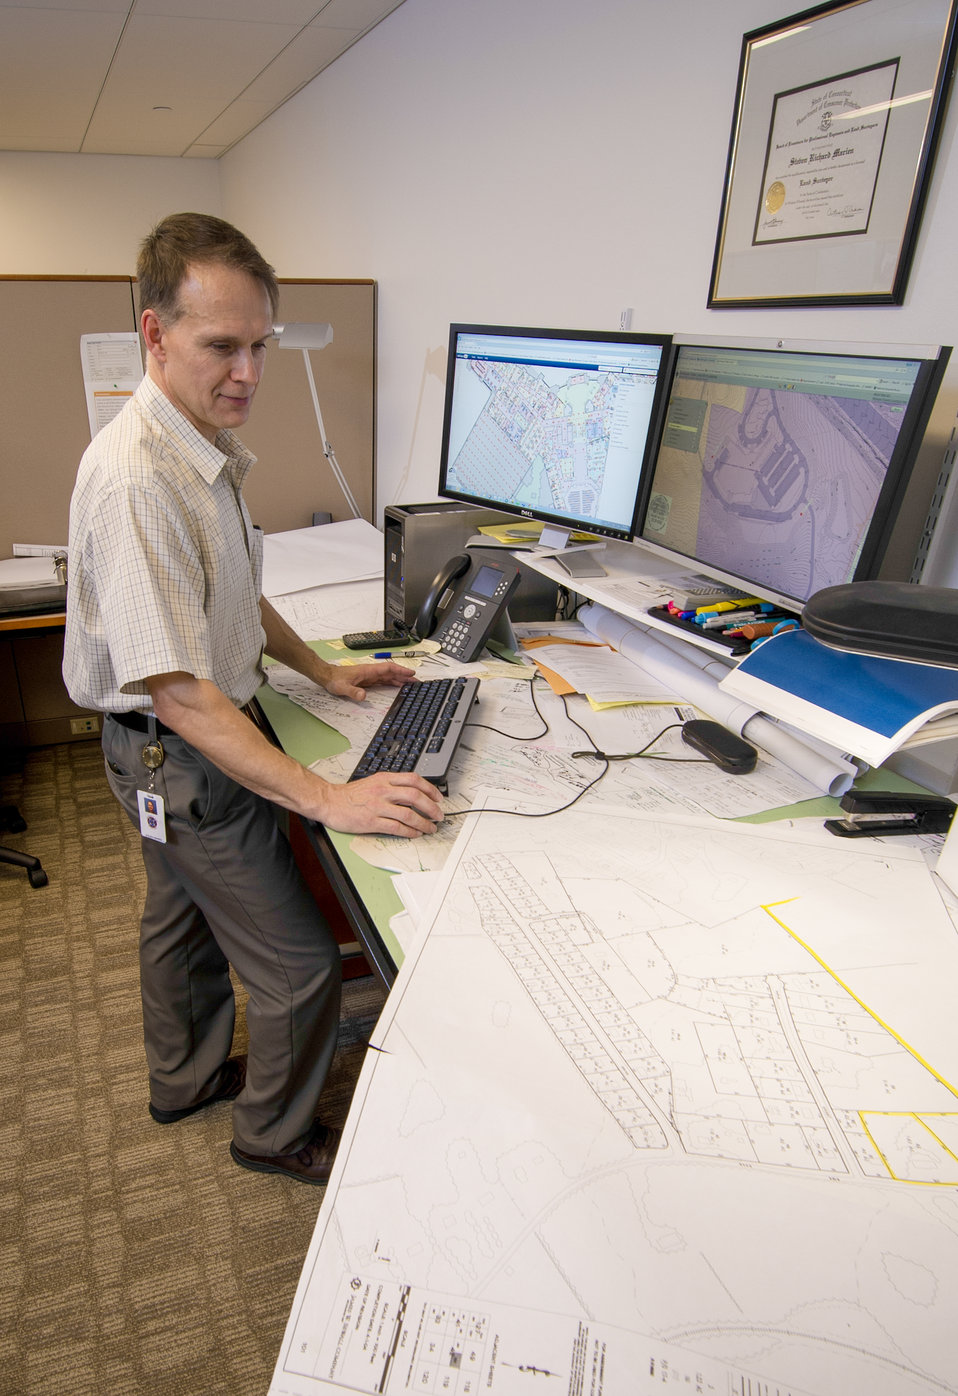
Computer-Aided Design (CAD) Document Control Manager Steve Marien works at his office in the Mohegan Tribe Community Center and Government Building in Uncasville, CT on Nov. 18, 2013. A U.S. Department of Agriculture (USDA) Rural Development (RD) Community Facility Loan was provided to the Mohegan Tribe for the construction of the Mohegan Tribe Community Center and Government Building in Uncasville, CT. USDA’s RD Community Facilities Programs makes and guarantees loans to develop essential community facilities in rural areas and towns of up to 20,000 in population. Loans and guarantees are available to public entities such as municipalities, counties, parishes, boroughs, and special-purpose districts, as well as to non-profit corporations and tribal governments. The 160,000 square foot building Center hosts an exhibit celebrating federal recognition, history of Mohegan Chiefs, a new Library and Archives space, new Arts and Crafts room, a new gymnasium, and a new community room to enjoy food and family. The Center will continue the Tribe’s plan for growth and meeting the needs of its members.